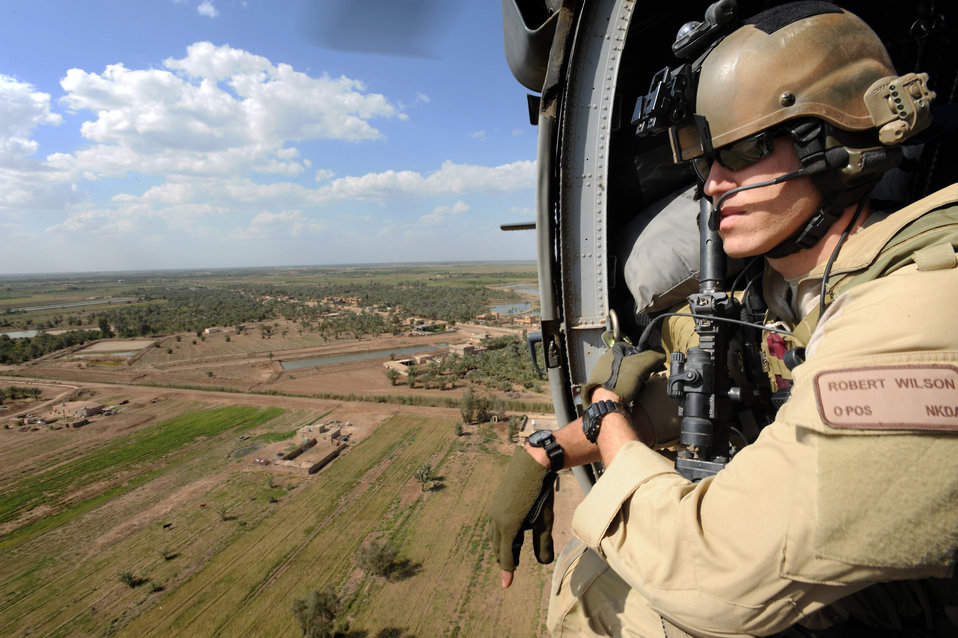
Balad squadron serves as Iraq's 'guardian angels'

Capt. Robert Wilson scans for threats below during a mission April 10 in support of Operation Iraqi Freedom. He is a combat rescue officer assigned to the 64th Expeditionary Rescue Squadron at Joint Base Balad, Iraq,